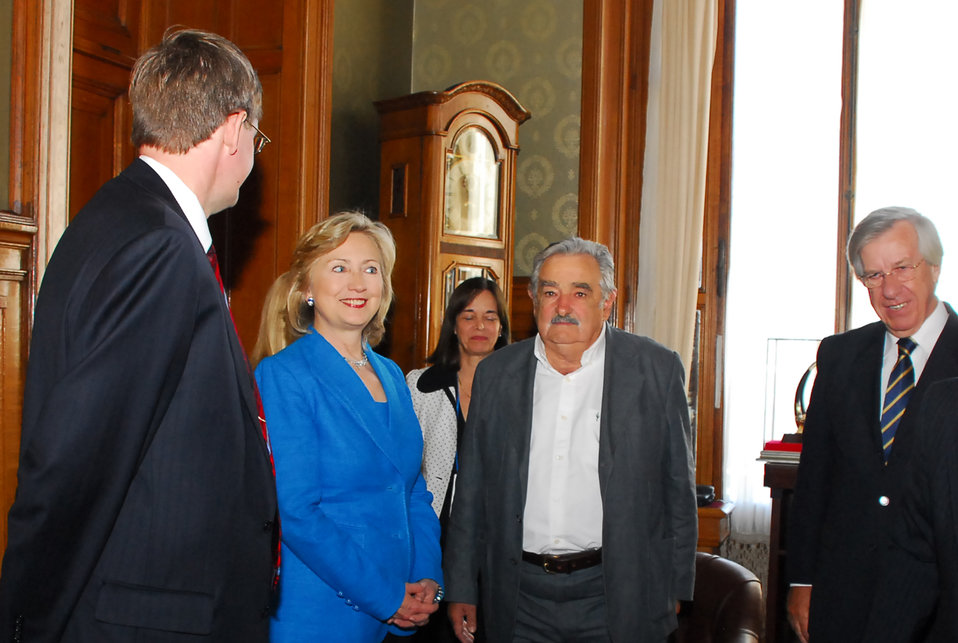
Secretary Clinton Meets With Uruguay President-elect

U.S. Secretary of State Hillary Rodham Clinton meets with Uruguay President-elect Jose Mujica and opposition leaders, Montevideo, Uruguay March 1, 2010.